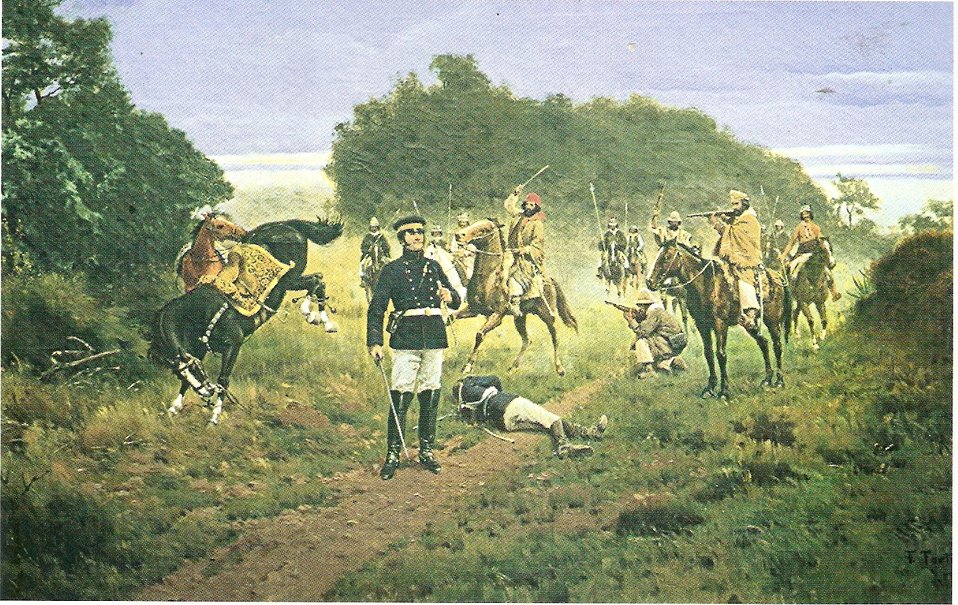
General José Maria Paz captured by Federal Army`s militia en Córdoa province (1831). Español: Milicianos federales capturan al general José María Paz en el paraje de El Tío (Córdoba) en 1831, en momentos en que este inspeccionaba el terreno donde iba a darse la batalla entre los ejércitos de la Liga del Interior y la Liga del Litoral.